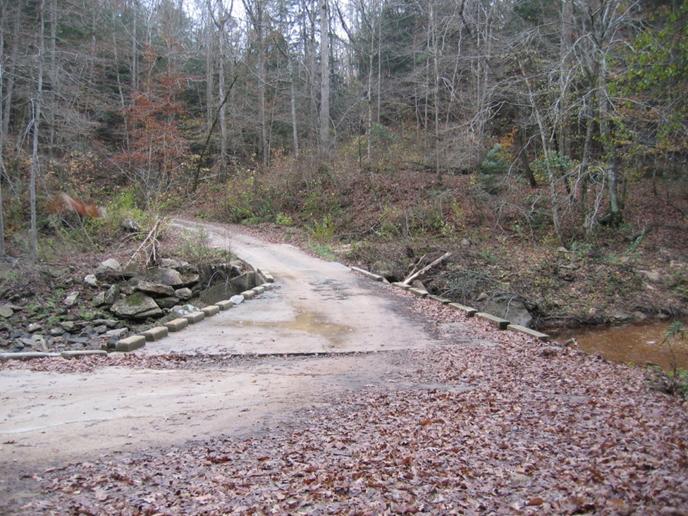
brushy one

Looking south at the tight curve radius of the old Brushy Creek Bridge in the Bankhead National Forest in Double Springs, AL in 2004.